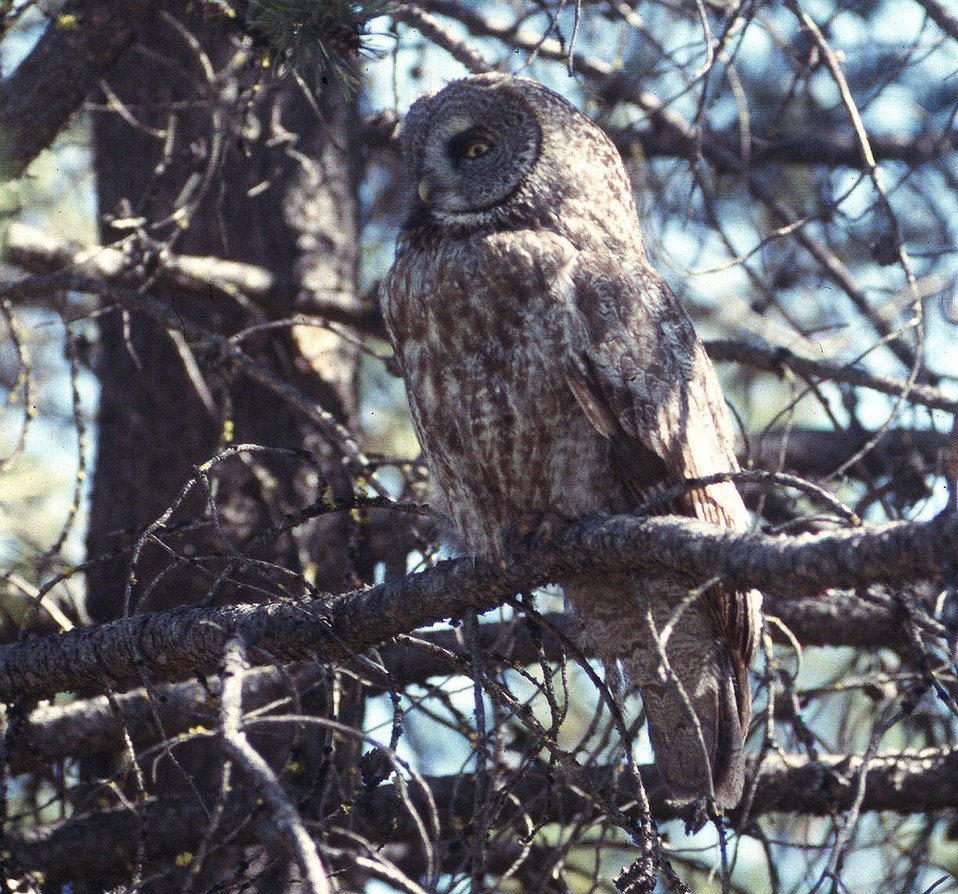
Great Gray Owl (Strix nebulosa) near the Sun River Area on the Deshcutes National Forest in eastern Oregon.